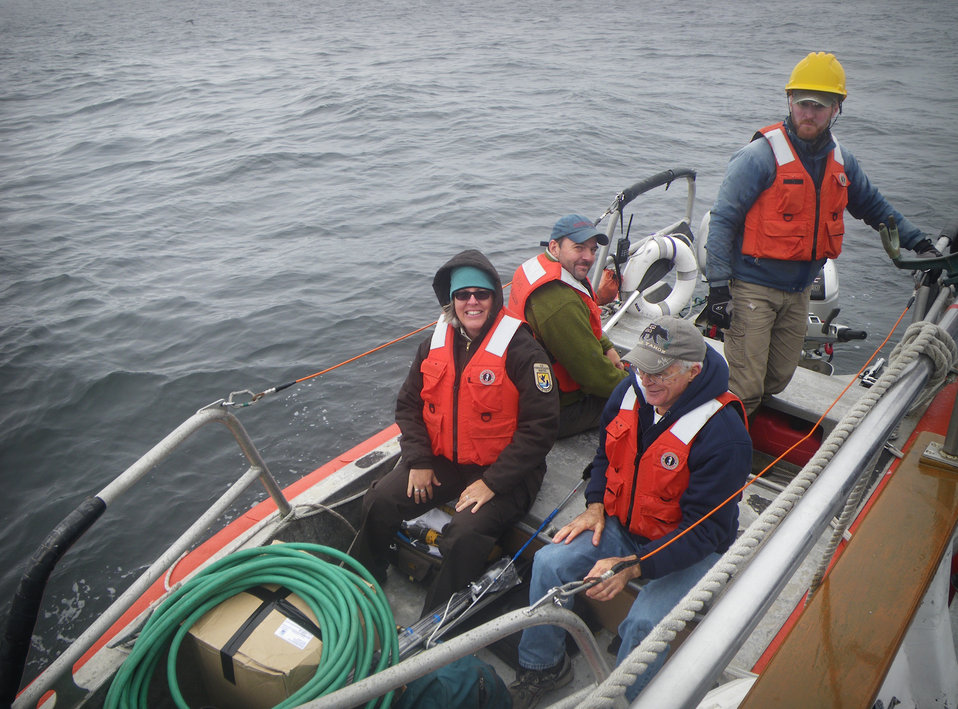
San Francisco Bay NWR Complex Manager with biologists and contractors

San Francisco Bay NWR Complex Manager, Anne Morkill with biologists and contractors arrive at the island.